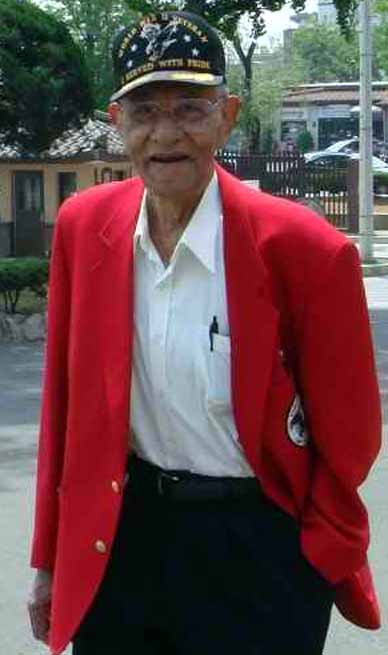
Tuskegee Airman remembered

Retired Master Sgt.James Price grins as he walks toward his float in the 2008 Osan Armed Forced Day Parade. Sergeant Price, a Tuskegee Airman, passed away July 19 after succumbing to injuries suffered in a fall several weeks earlier.